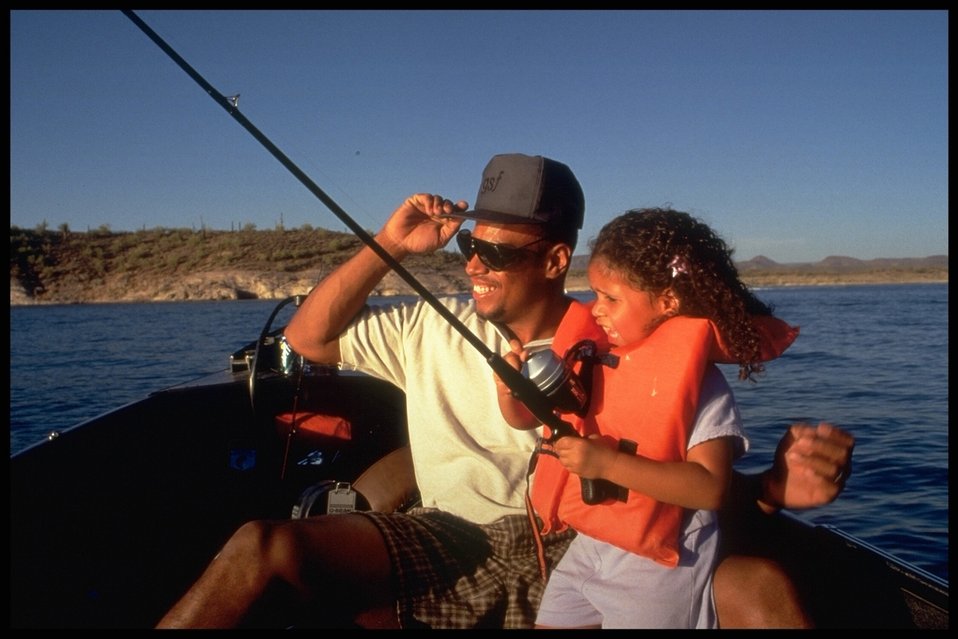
Wow, dad look what I caught! Charles Golden and his daughter enjoy a fishing expedition on Lake Pleasant, north of Phoenix, Arizona.